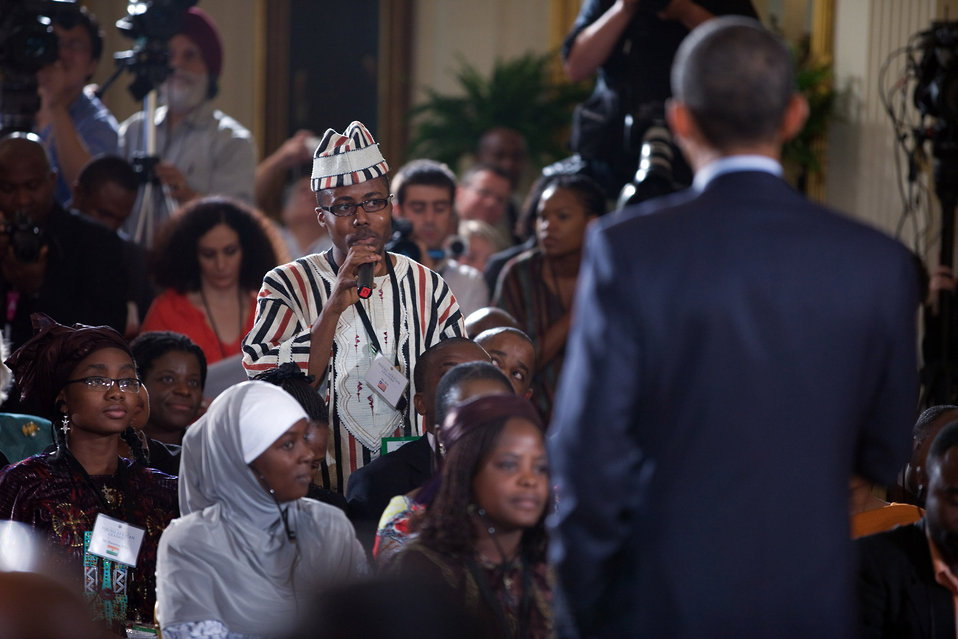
President Obama Listens to a Question from Bai Sama Gwenning Best from Liberia

President Barack Obama listens to a question from Bai Sama Gwenning Best from Liberia during a town hall-style meeting with young African leaders in the East Room of the White House in Washington, D.C., on August 3, 2010.